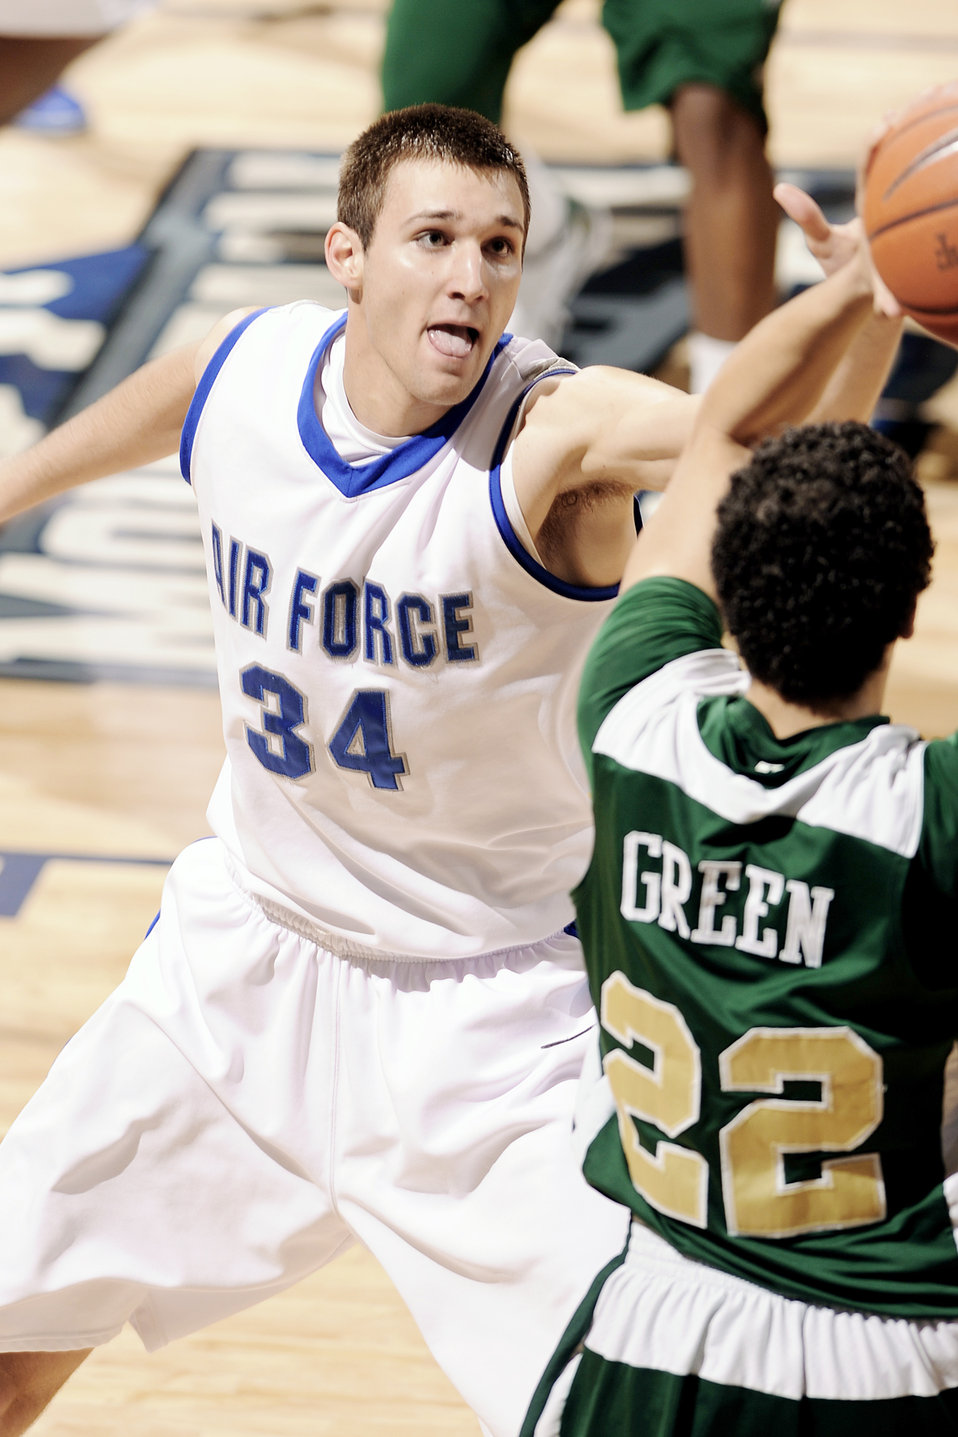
Colorado State beat Falcons

Air Force Academy freshman Taylor Broekhuis pressures opponent Dorian Green as Colorado State beat Air Force 51-47 at the Academy's Clune Arena Feb 9, 2010. The Falcons are 9-14 overall and 1-9 in the Mountain West Conference.